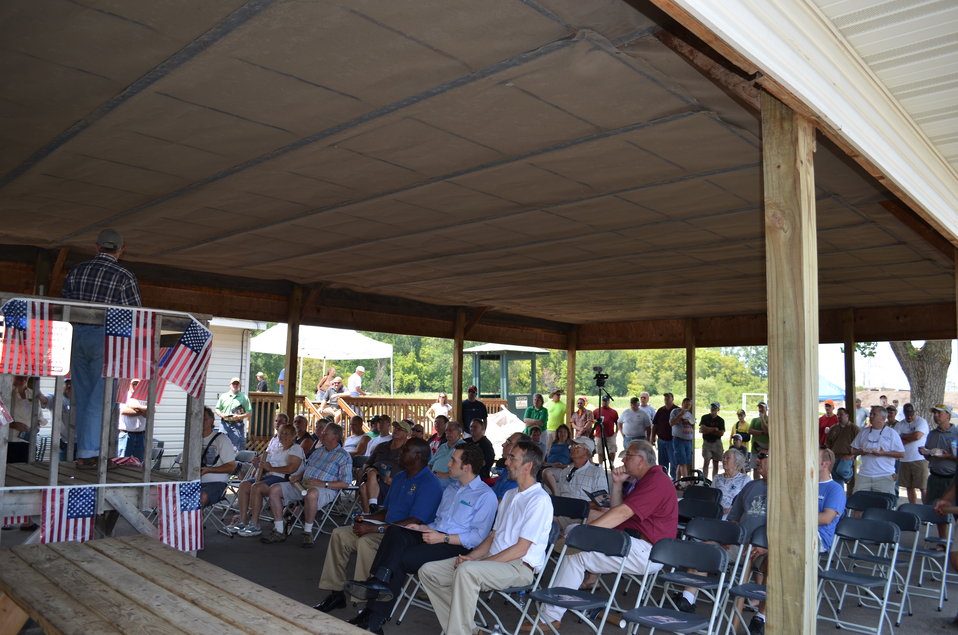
2012 Federal Duck Stamp Home State Ceremony and Shooting Sports

The ceremony was held at the South Saint Paul Rod and Gun Club.